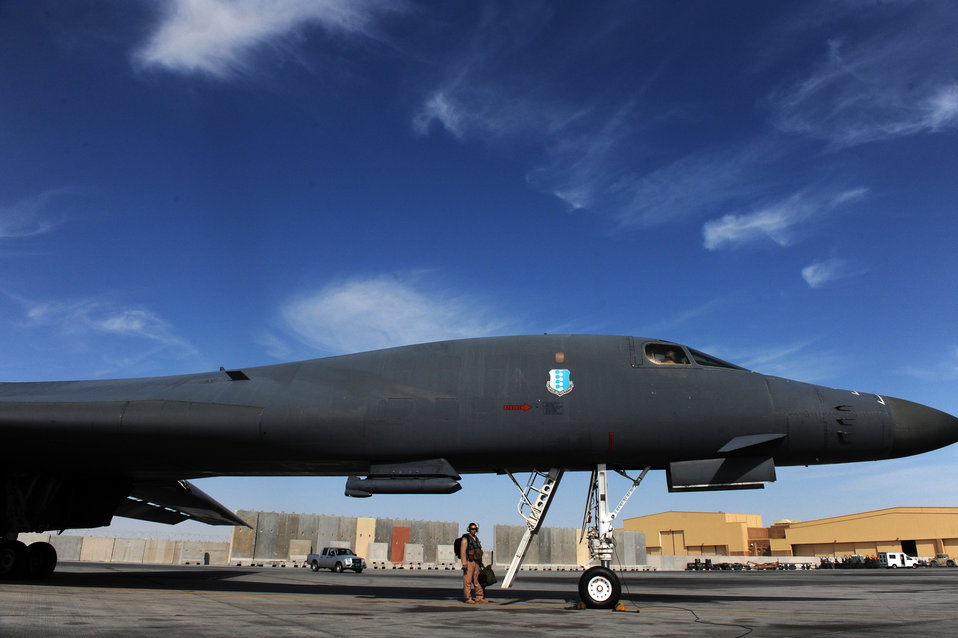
Operation Enduring Freedom

Maj. Nathan Rowan prepares to board a B-1B Lancer for the last mission of his deployment Jan. 23, 2010, at an air base in Southwest Asia. Major Rowan is a B-1B Lancer pilot assigned to the 37th Expeditionary Bomb Squadron.